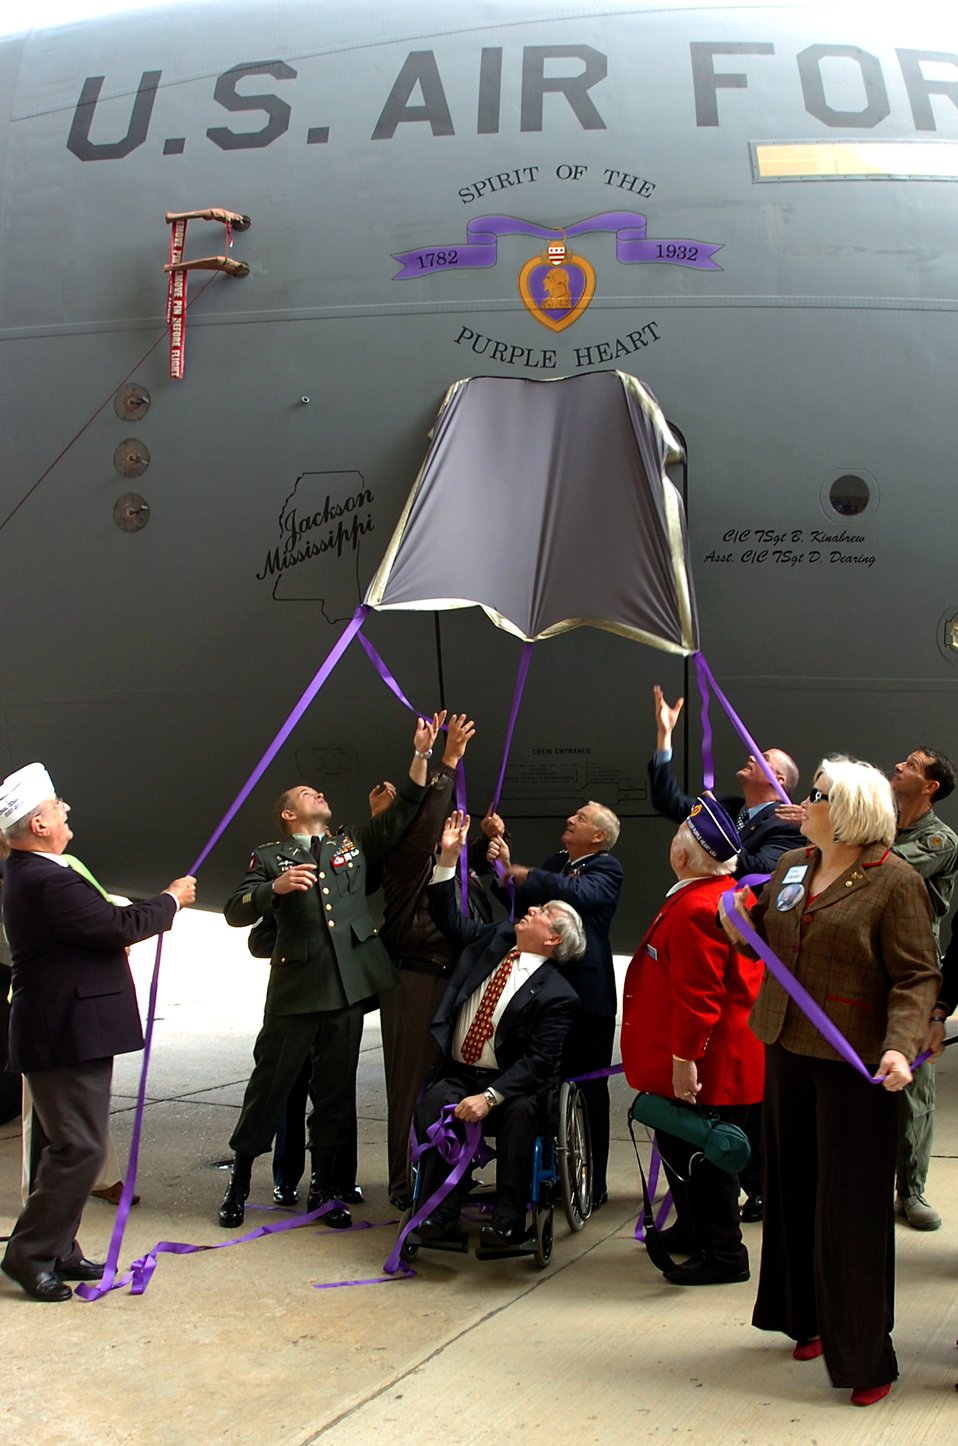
Aircraft dedicated to Purple Heart recipients

Purple Heart recipients and National Guardsmen unveil special nose art on a Mississippi Air National Guard C-17 Globemaster III during an aircraft naming and dedication ceremony Nov. 20 at the 172nd Airlift Wing in Jackson, Miss. The wing routinely flies aeromedical evacuation missions from Iraq to Germany, and then on to the U.S. Aircrews have transported more than 19,000 patients since the wing's mobilization for the mission in October 2005.